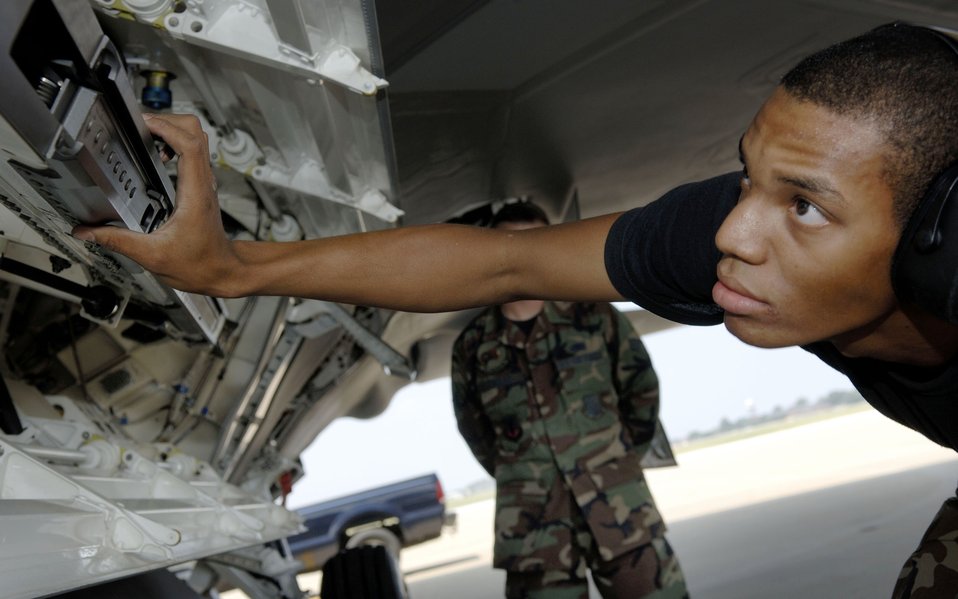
Raptor crews

Airman 1st Class Lamond Janey inspects a missile launcher on an F-22 Raptor during a weapons load inspection at Langley Air Force Base, Va., on Aug. 15. Airman Janey is a weapons load crew member with the 27th Aircraft Maintenance Unit.